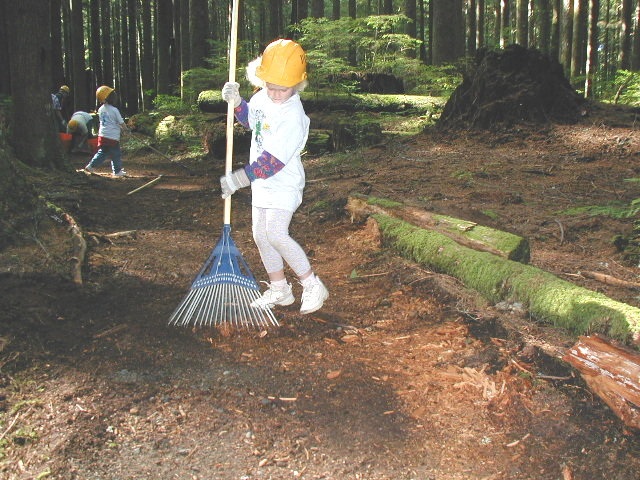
Sometimes the tools were bigger than the workers